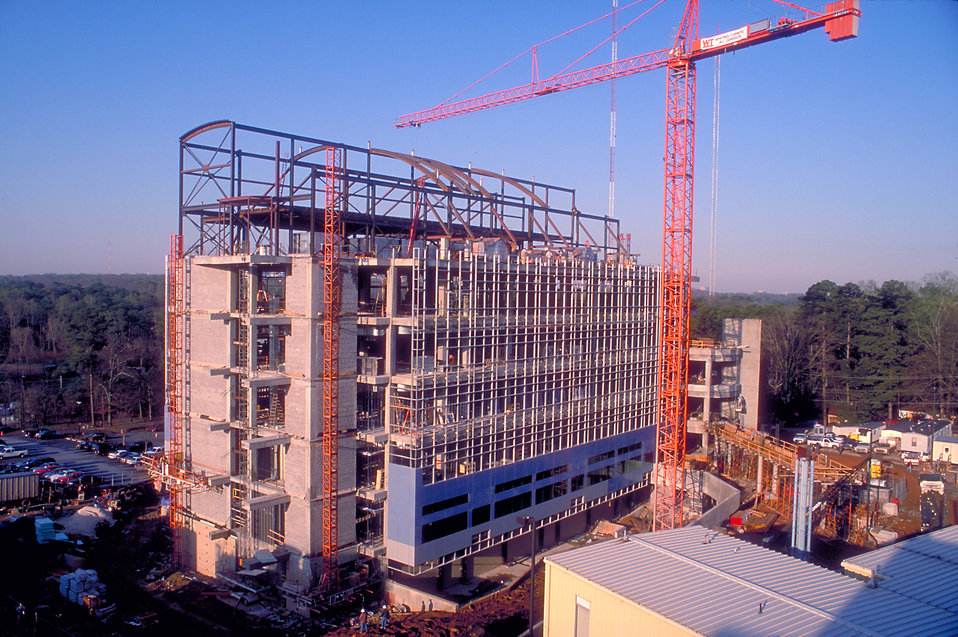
On the Centers for Disease Control's (CDC) Roybal Campus, located in metropolitan Atlanta, Georgia, this March, 1999 image depicts the intermediate phases of construction of Building 17.